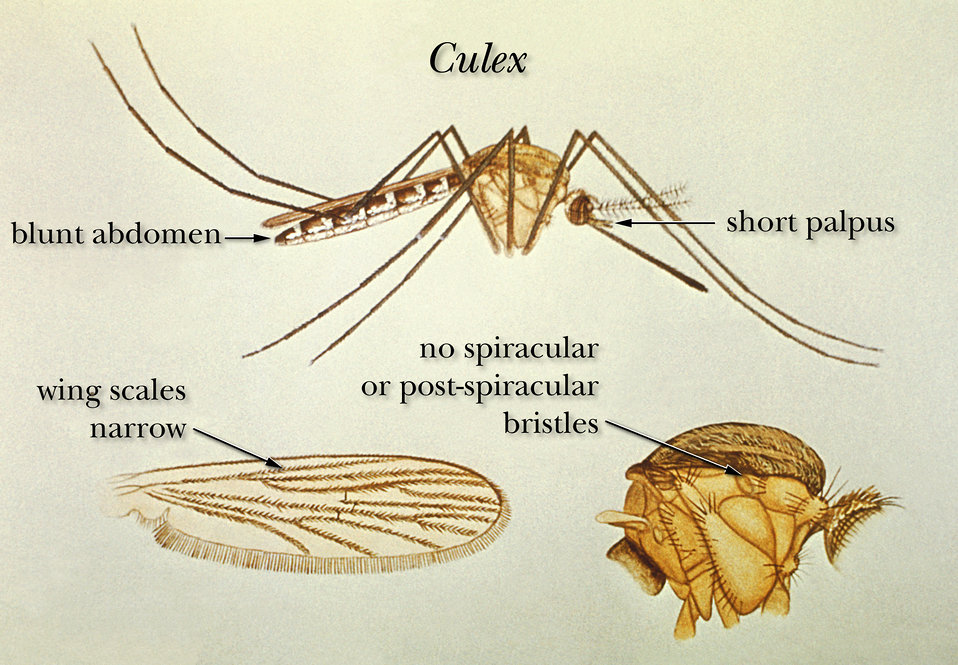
An illustration depicting morphologic characteristics common to Culex mosquitoes.